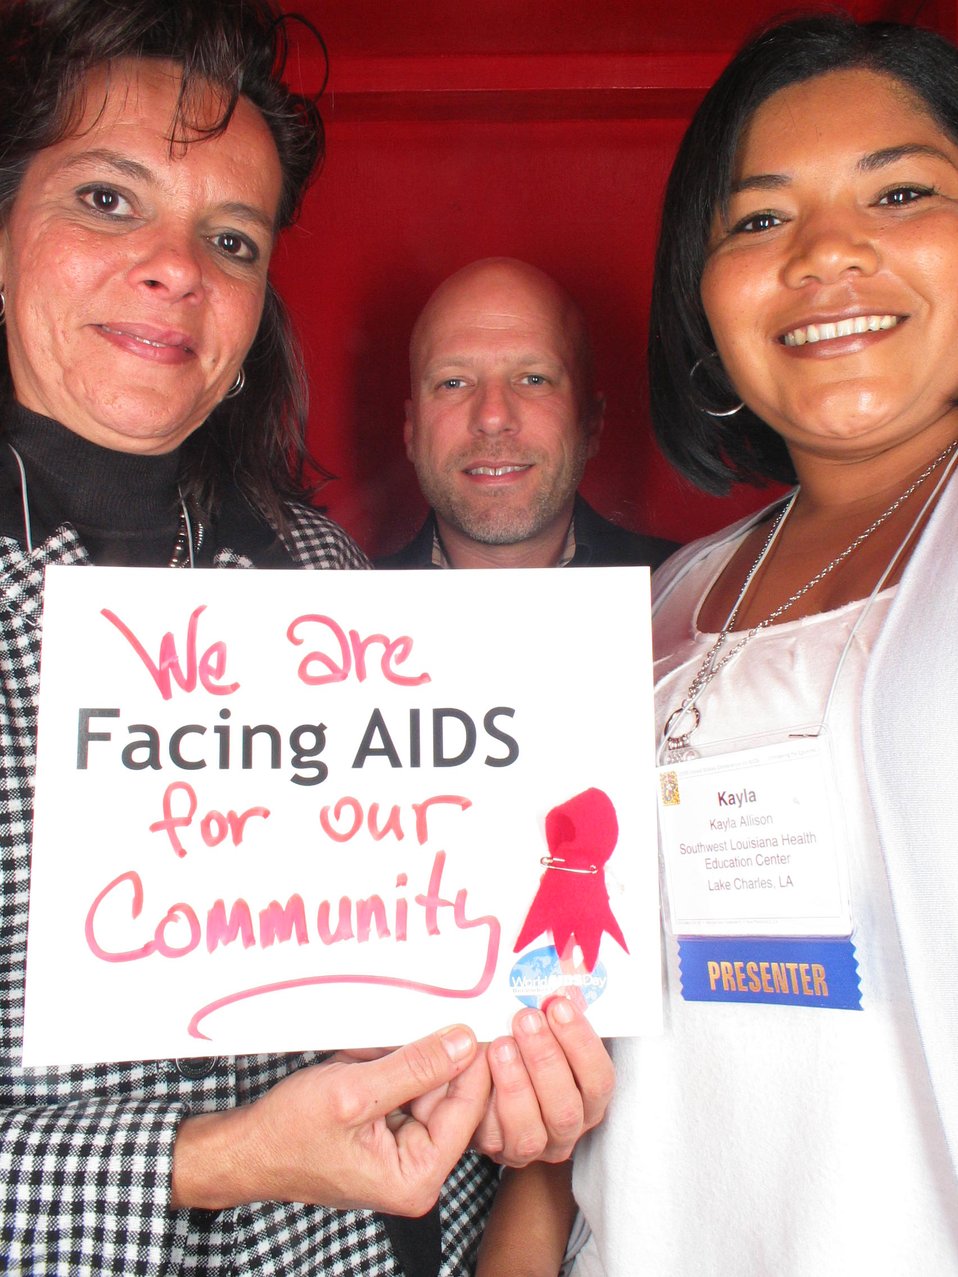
We are Facing AIDS for our community